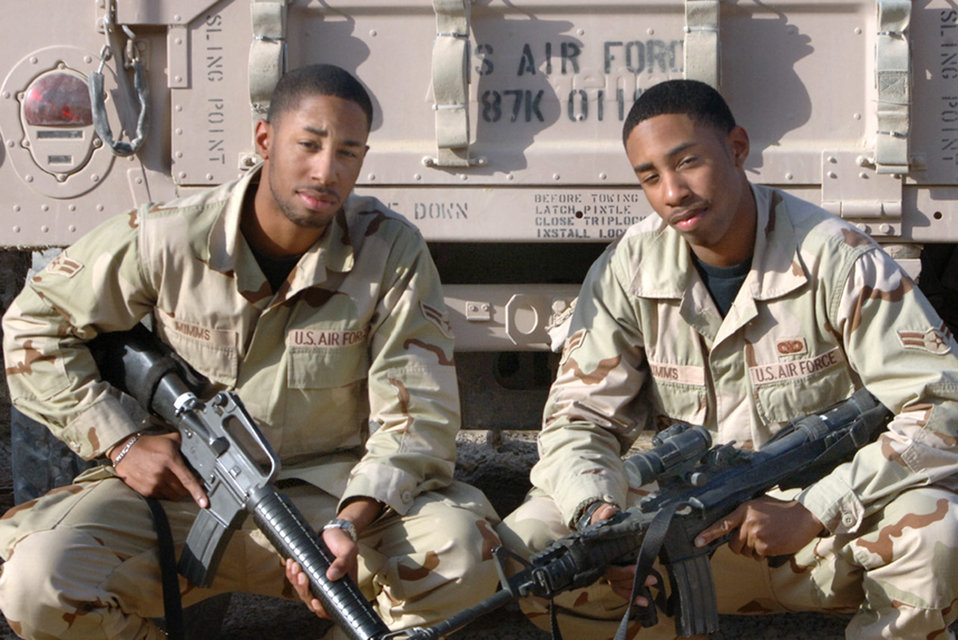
Twins deploy

BAGHDAD, Iraq (AFPN) -- Airmen 1st Class Travis Mimms (left) and Terence Mimms are identical twins. They are assigned to separate bases in Florida and each did not know the other was deploying to the same location. Travis, a supply troop, deployed first from Hurlburt Field, Fla., and Terence, a security forces member, deployed from Eglin Air Force Base, Fla.